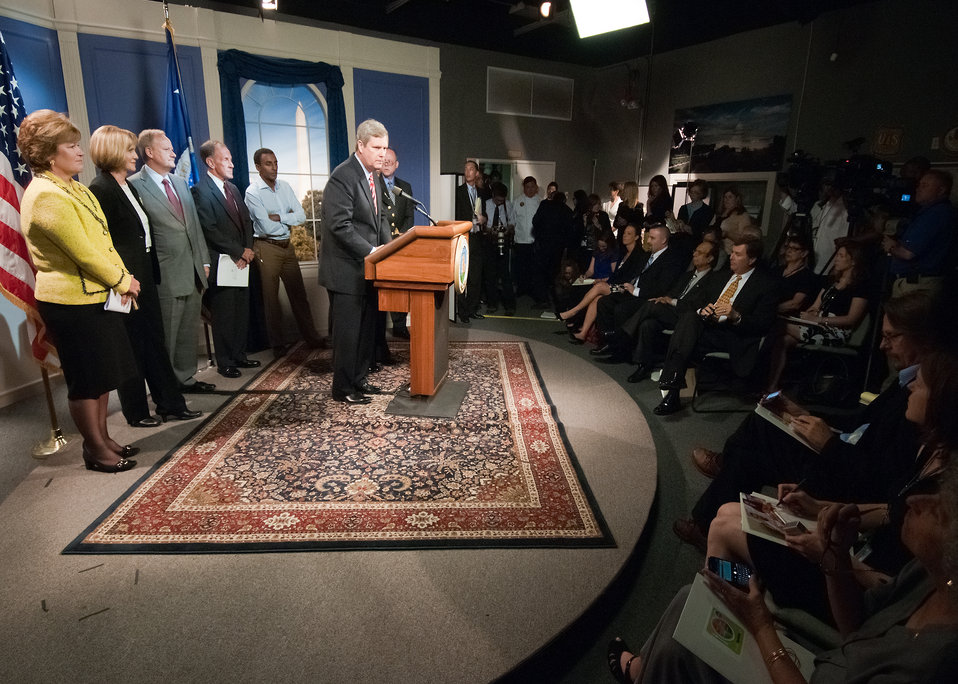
Agriculture Secretary Tom Vilsack (at podium) held a press conference directly after the announcement new food icon that will serve as a reminder to help consumers make healthier food choices at the U.S. Department of Agriculture on Thursday, June 2, 2011 (behind Secretary Vilsack L to R President and CEO, Food Marketing Institute Leslie Sarasin, Director of Nutrition, WebMD Kathleen Zelman, President and CEO, United Fresh Produce Association Tom Stenzel, Lieutenant General US Air Force (Ret.) Norman R. Seip, Chef Marcus Samuelsson, Surgeon General Dr. Regina Benjamin, Deputy Director, Center for Nutrition Policy and Promotion (CNPP) Dr. Robert Post). First Lady Michelle Obama and Surgeon General Regina Benjamin joined Secretary Vilsack at the launch of the new food icon. The White House Child Obesity Task Force called for simple advice to consumers with information to help them make healthy food choices. As a result USDA has introduced the new food icon to replace the MyPyramid image representing the food guide pyramid as the government’s primary food group symbol. The new food icon will be part of a comprehensive nutrition communication initiative that provides consumers with easy-to-understand recommendations, a new website with expanded information and other tools and resources.